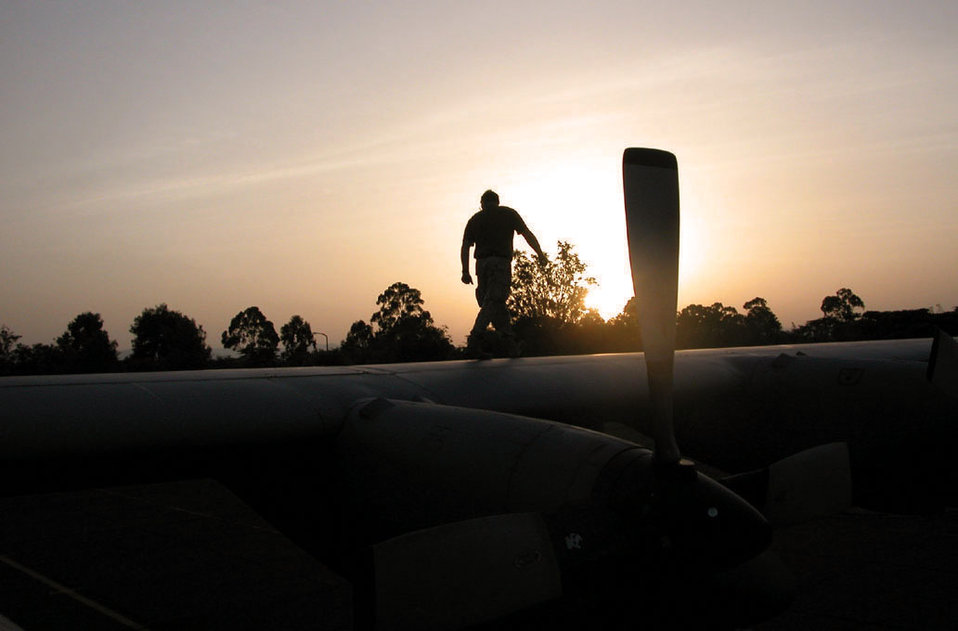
Airmen join Soldiers taking Kenya military to new heights

KENYA -- Master Sgt. Dan Schmitz (conducts) a final check of a C-130 Hercules before departure June 6. More than 140 U.S. and Kenyan Army paratroopers left the Kenyan army base landing strip and made successful jumps during the three-day, 14-drop mission. Sergeant Schmitz is a crew chief with the 746th Expeditionary Airlift Squadron at a forward-deployed location.